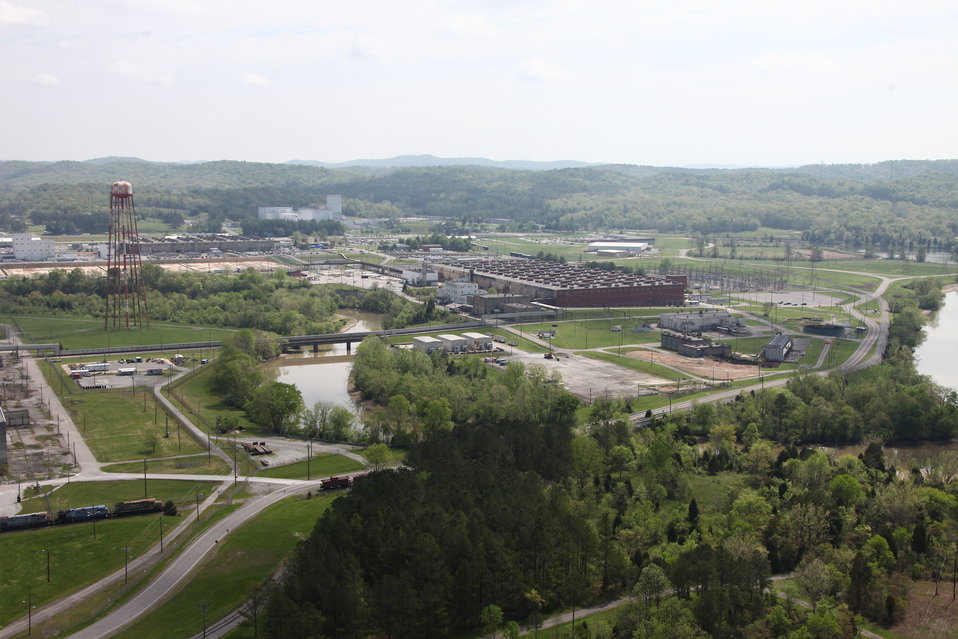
ETTP